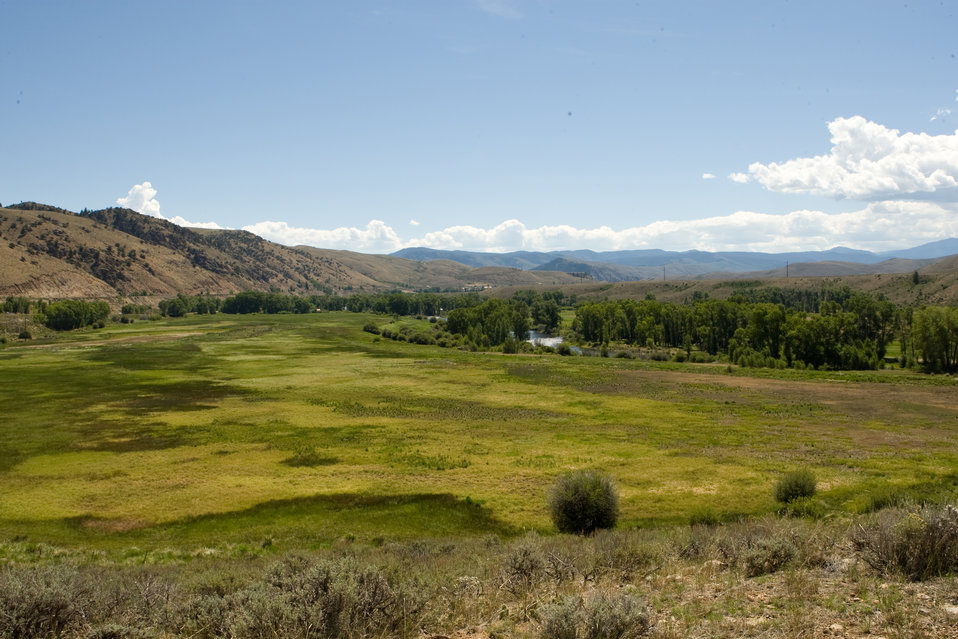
Colorado Rare Plant Conservation Initiative

The Colorado Rare Plant Conservation Initiative (RPCI) is a partnership of 23 statewide and regional agencies, private organizations, and academic institutions working to conserve 121 rare plants in Colorado. As part of these efforts the group developed the Colorado Rare Plant Conservation Strategy, developed Best Management Practices to reduce energy development impacts, addressed climate change, and developed focused strategies for the conservation of individual species at eight priority landscapes. The group has also worked to coordinate volunteer efforts for plant conservation across the state.